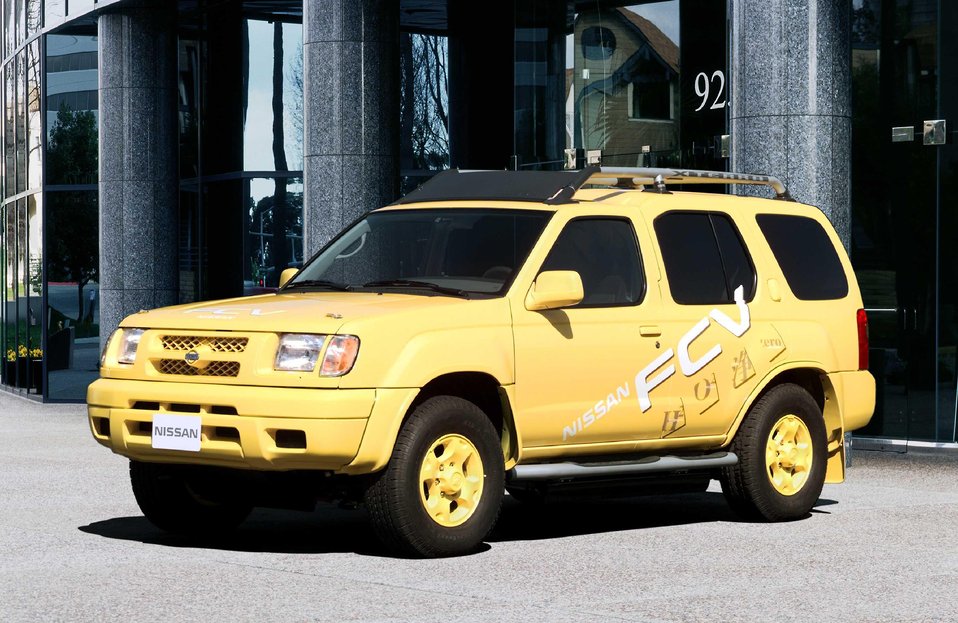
NISSAN'S FCV BASED ON THE XTERRA SUV PLATFORM.